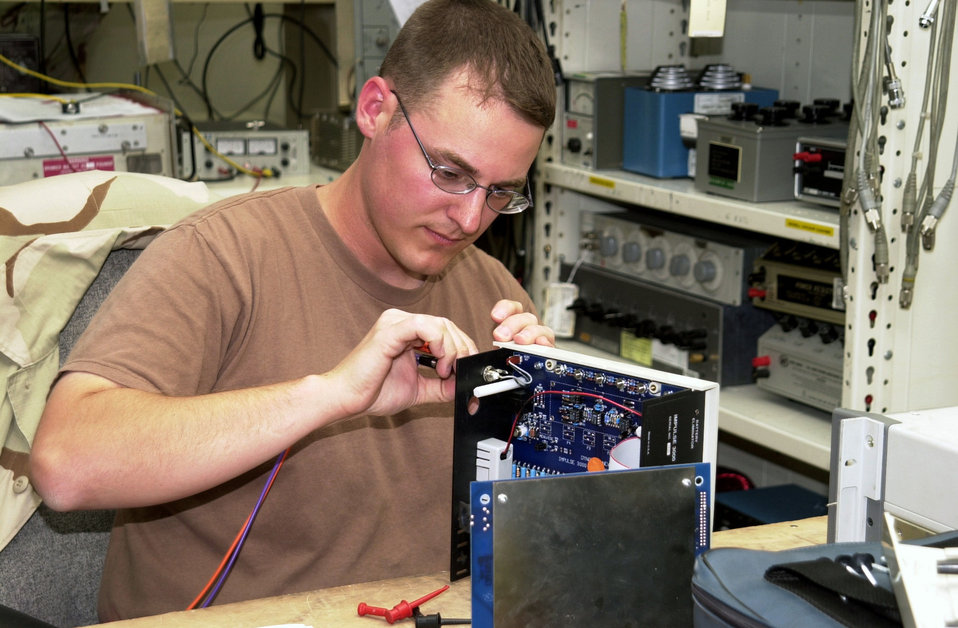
Practicing precision

SOUTHWEST ASIA -- Staff Sgt. Matthew Koch performs a load and resistance calibration on a defibrillator analyzer. Hospitals use defibrillator analyzers to verify proper operation of their defibrillators, which are used to stabilize patients who have an abnormal heart rate. Sergeant Koch is a precision measurement equipment laboratory technician with the 379th Expeditionary Maintenance Squadron and is deployed from Shaw Air Force Base, S.C.